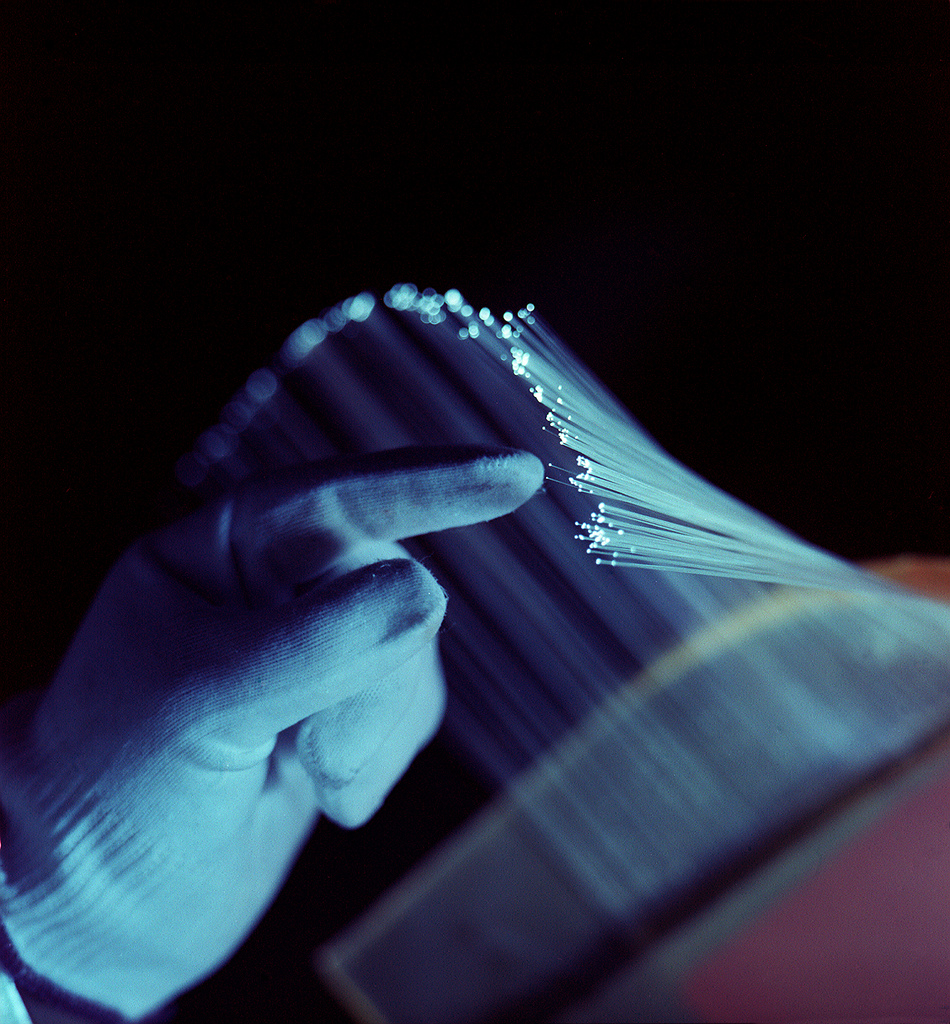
Scintillating glass optical fibers are the first viable medium for large -area, solid-state, thermal neutron sensors that have applications in national security, medicine, and materials research. Here, ultraviolet-induced florescence mimics scintillation.